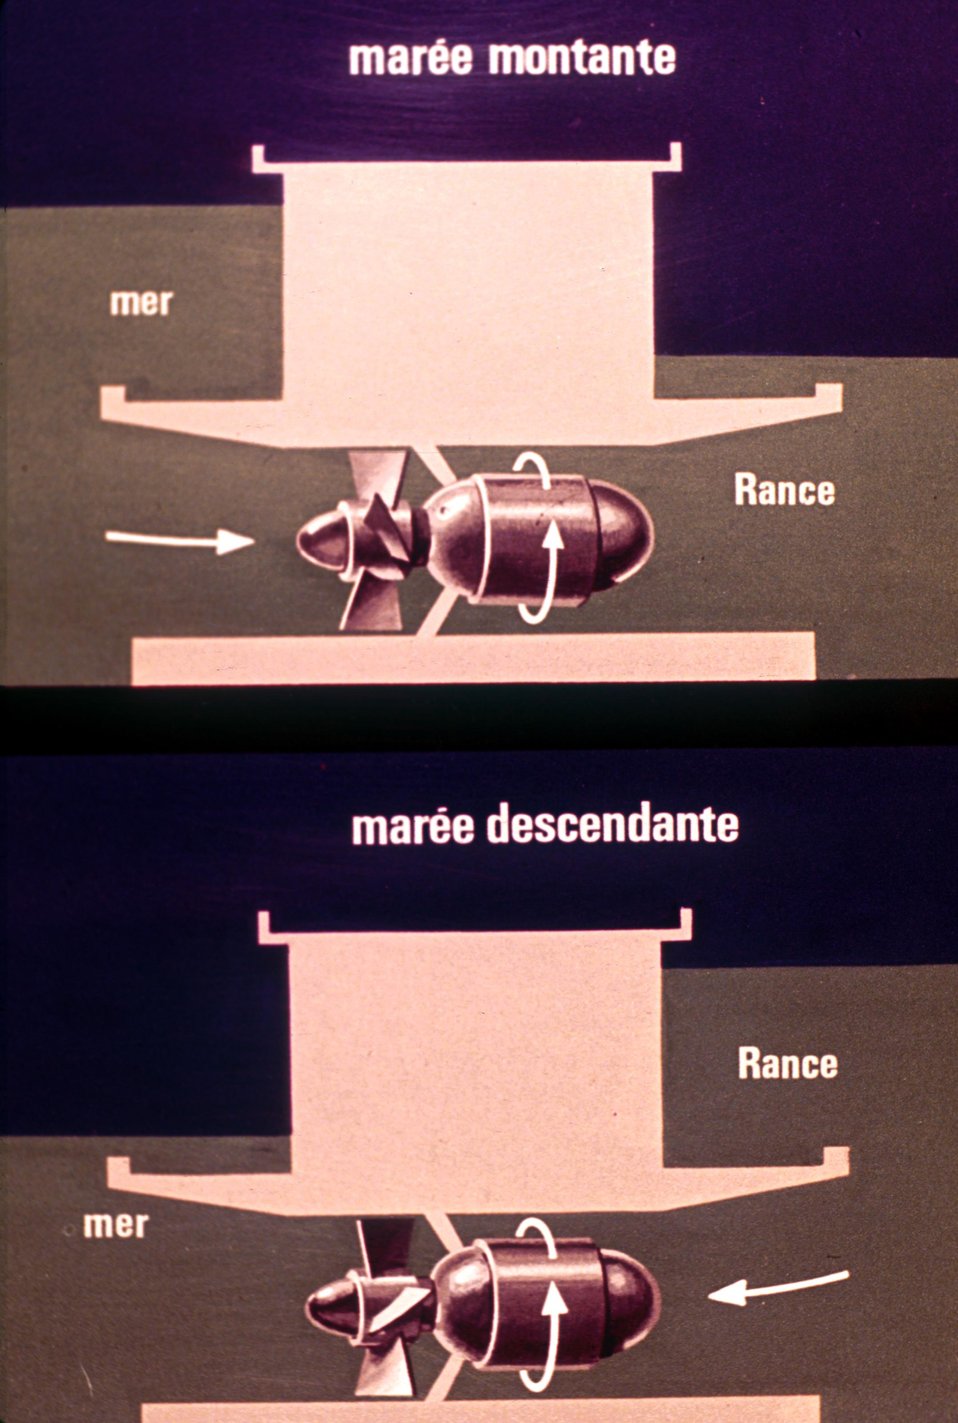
L'usine marÐmotrice ; schÐma.